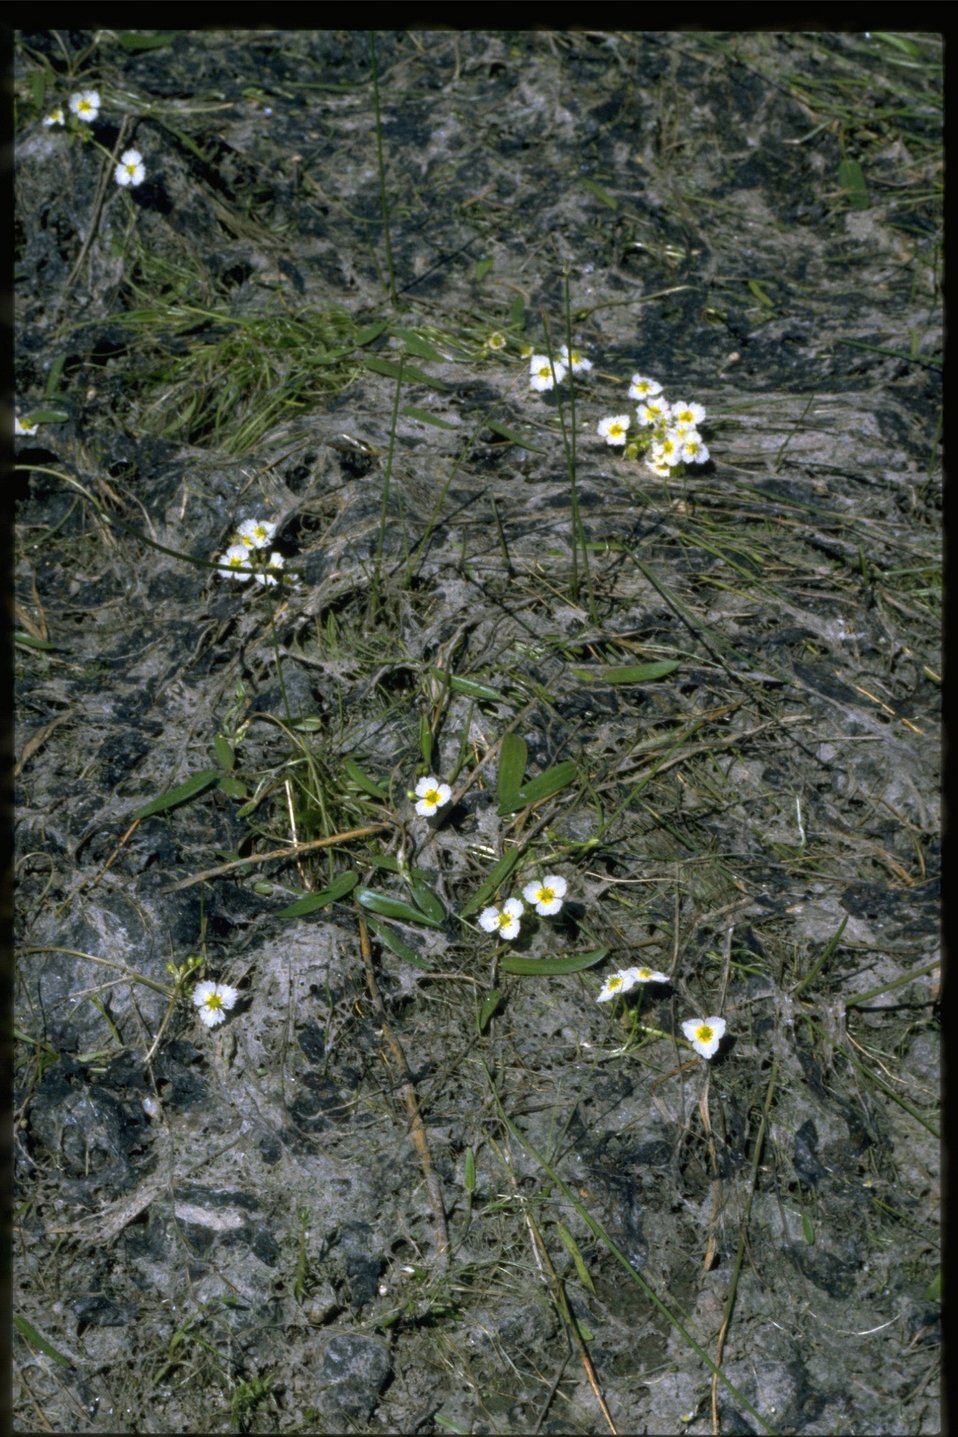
Far shot of wildflower habitat.